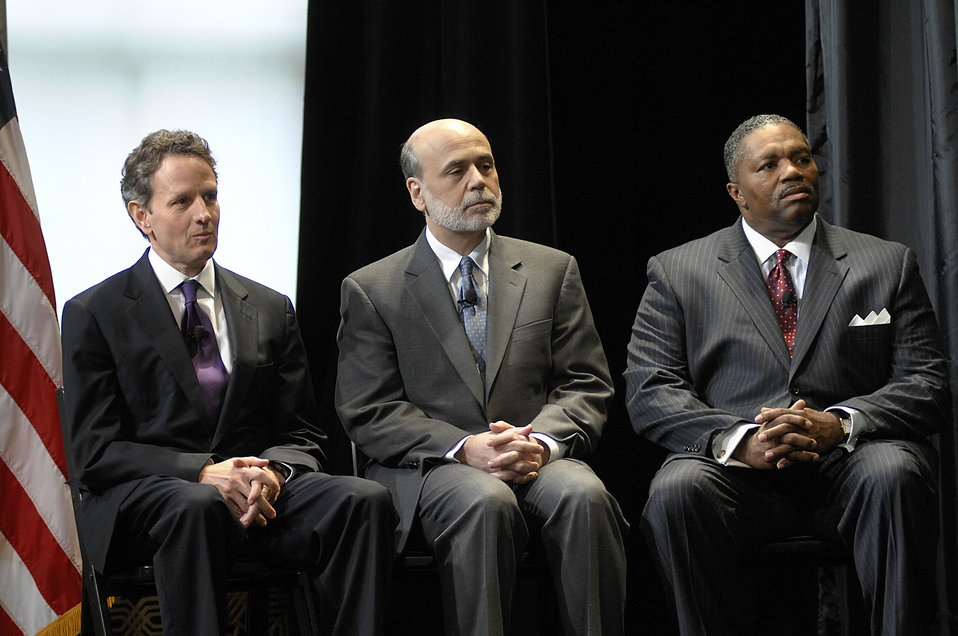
Unveiling of new $100 note, 4/21/2010

Treasury Secretary Geithner, Federal Reserve Chairman Bernanke, and United States Secret Service Deputy Director Prewitt at the unveiling of new $100 note at the Treasury Department on April 21, 2010.